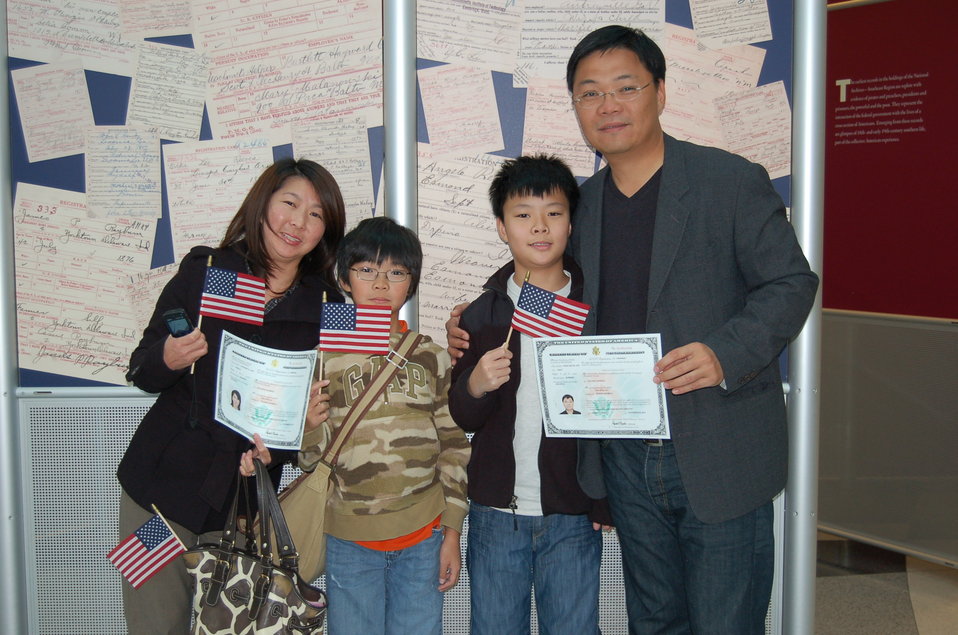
New Citizens